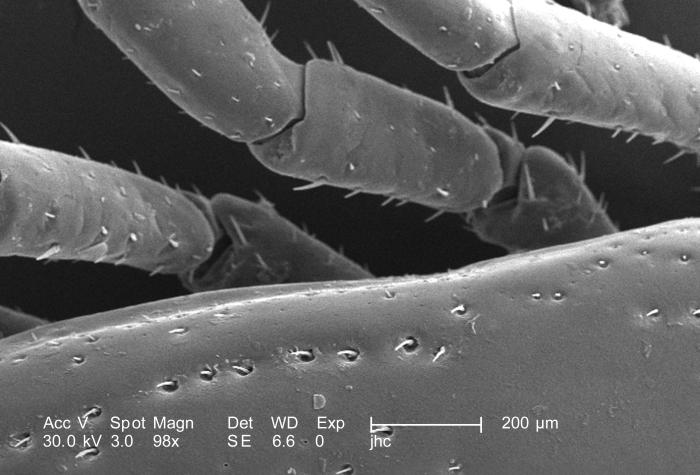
Under a relatively low magnification of 98X, this scanning electron micrograph (SEM) provided a closer view of this male Dermacentor sp. tick found upon a cat in the suburbs of Decatur, Georgia, which measured approximately 3.5mm from its gnathosoma (i.e., capitulum), which is where its mouthparts are located, to the distal abdominal margin (PHIL 9961). PHIL 9959 revealed all this tick's legs, placing it into the Phylum Arthropoda, i.e., from jointed ( 'Arthro'), and legs ('poda'), as well as the Class Arachnida, for they've eight of these legs, unlike insects, which use six appendages to move about. From proximal to distal location, each leg is comprised of a coxa, trochanter 1, trochanter 2, a femur, patella, tibia, a two-sectioned tarsus, and a two-part pretarsus, i.e., a pulvillus and claw. Here we see the trochantofemoral joints of the arachnid's left 3rd and 4th legs, and the femoropatellar joints of its left 2nd and 3rd legs.